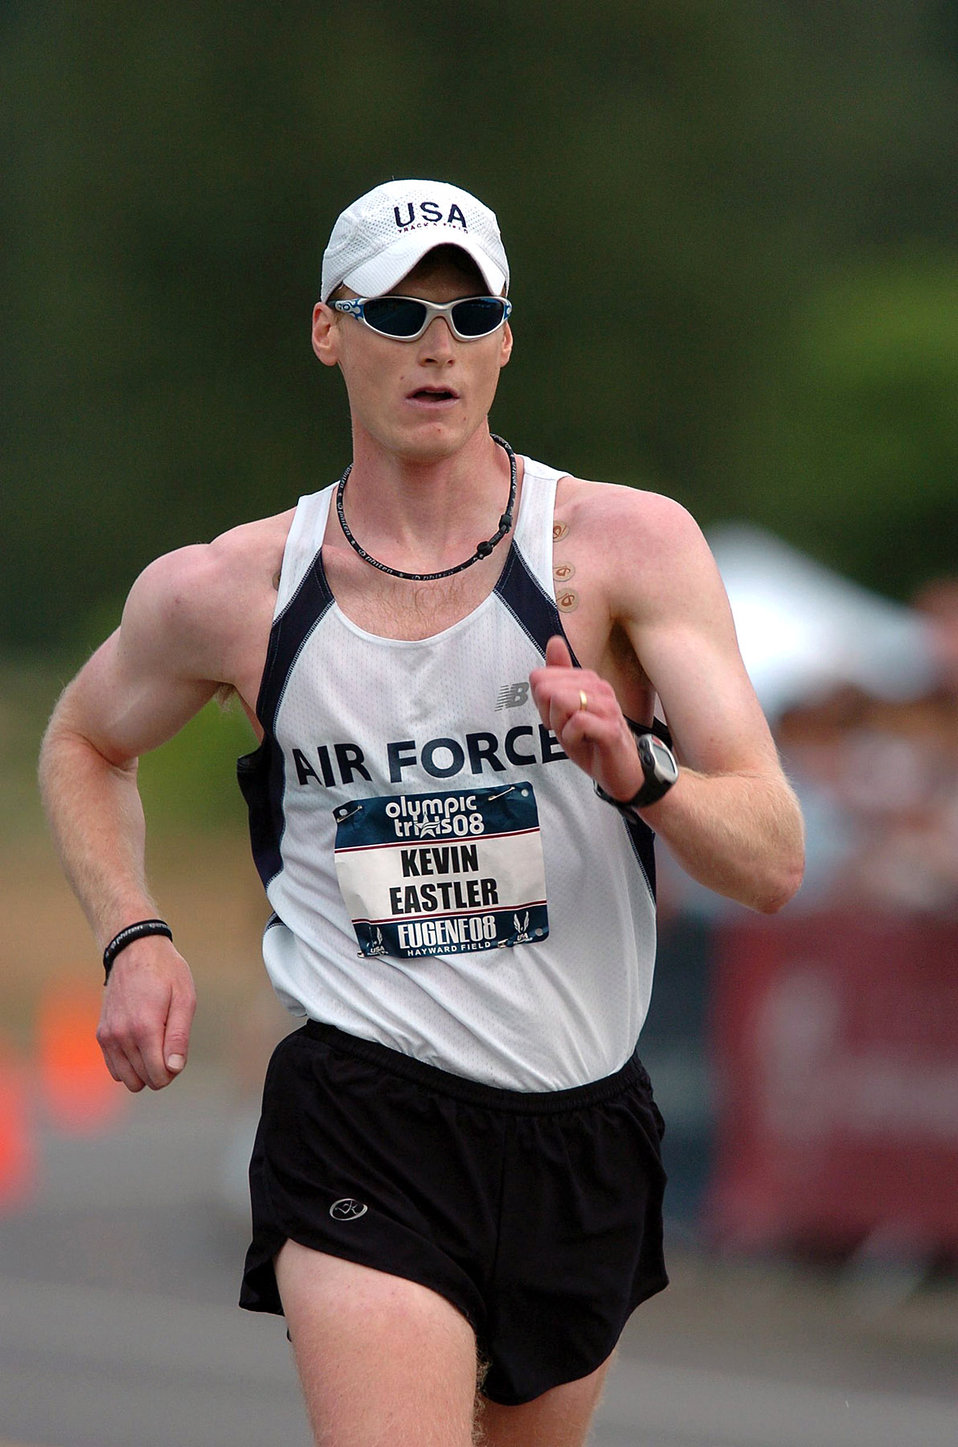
Heading for the gold

U.S. Air Force World Class Athlete Program Capt. Kevin Eastler earns an Olympic berth in the Beijing Games by winning the 20-kilometer race walk with a time of 1 hour, 27 minutes, 8 seconds at the 2008 U.S. Olympic Team Trials for Track & Field July 5 outside Autzen Stadium in Eugene, Ore.